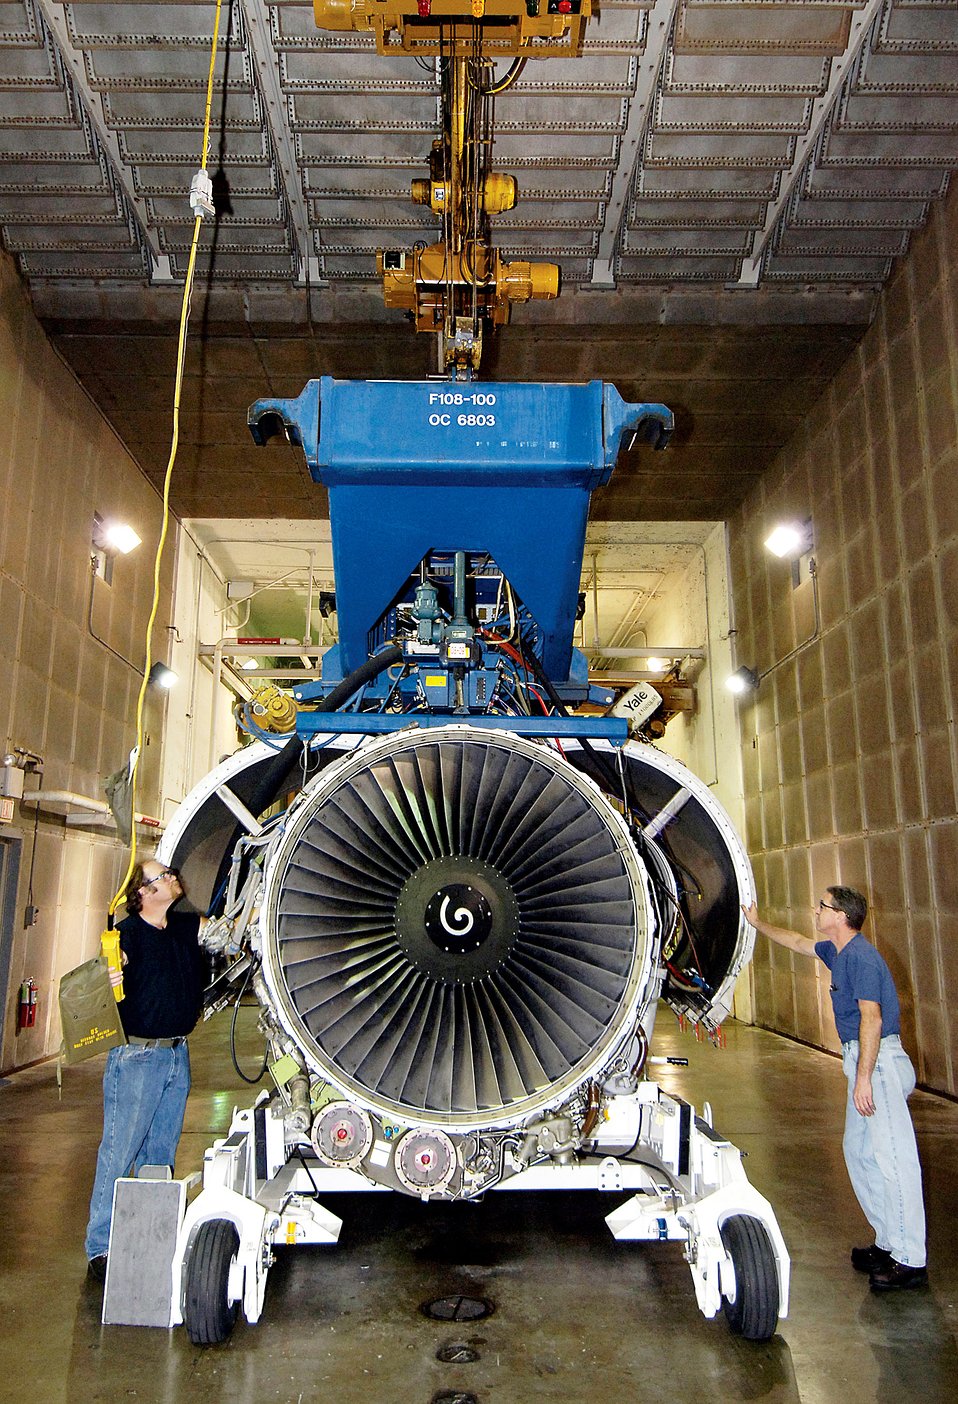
24-hour Tinkering: Maintenance around the clock

An F108-200 engine is moved by Steve Marlett (left) and William LeRoy after testing at the engine test cell of the 76th Propulsion Maintenance Group Oct. 2 at Tinker Air Force Base, Okla.